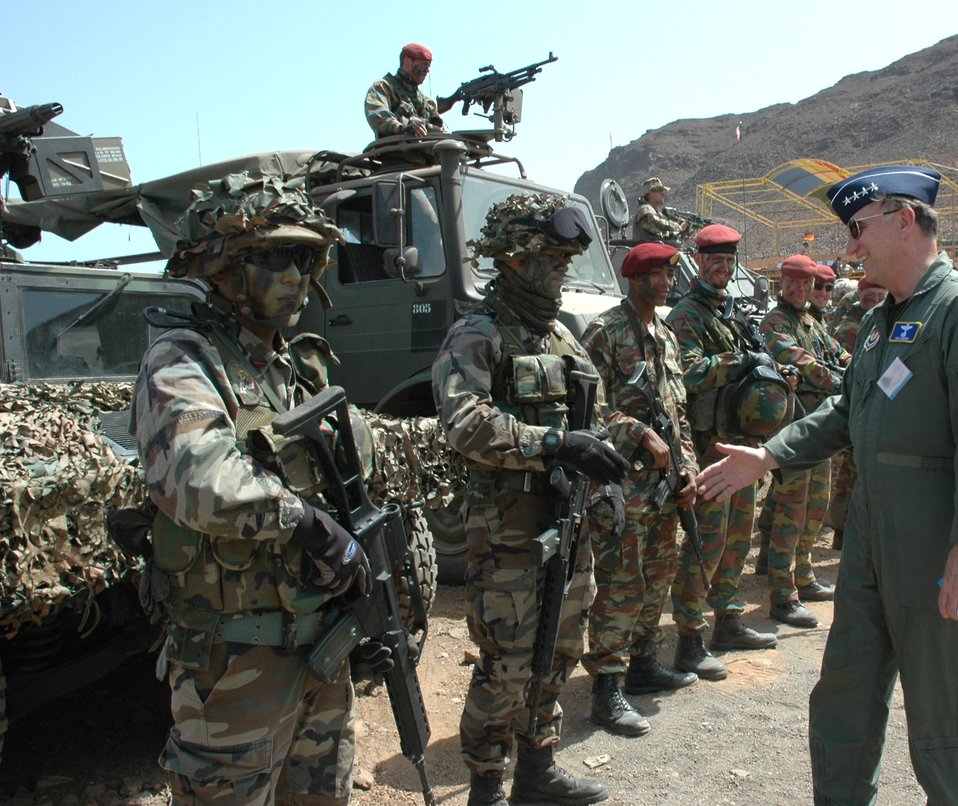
NATO troops exercise at Steadfast Jaguar

Gen. William T. Hobbins congratulates NATO troops at Exercise Steadfast Jaguar in Sao Vicente, Cape Verde, on Friday, June 23. The purpose of the live exercise is to test NATO Response Force-7's ability to project a force a strategic distance from mainland Europe and sustain it. More than 7,000 NATO personnel from land, maritime and air components trained together as a multinational joint force for the exercise that began June 15 and concludes today. General Hobbins is the commander of U.S. Air Forces Europe, and Air Component Command Ramstein, as well as director of the Joint Air Power Competency Center at Ramstein Air Base, Germany.